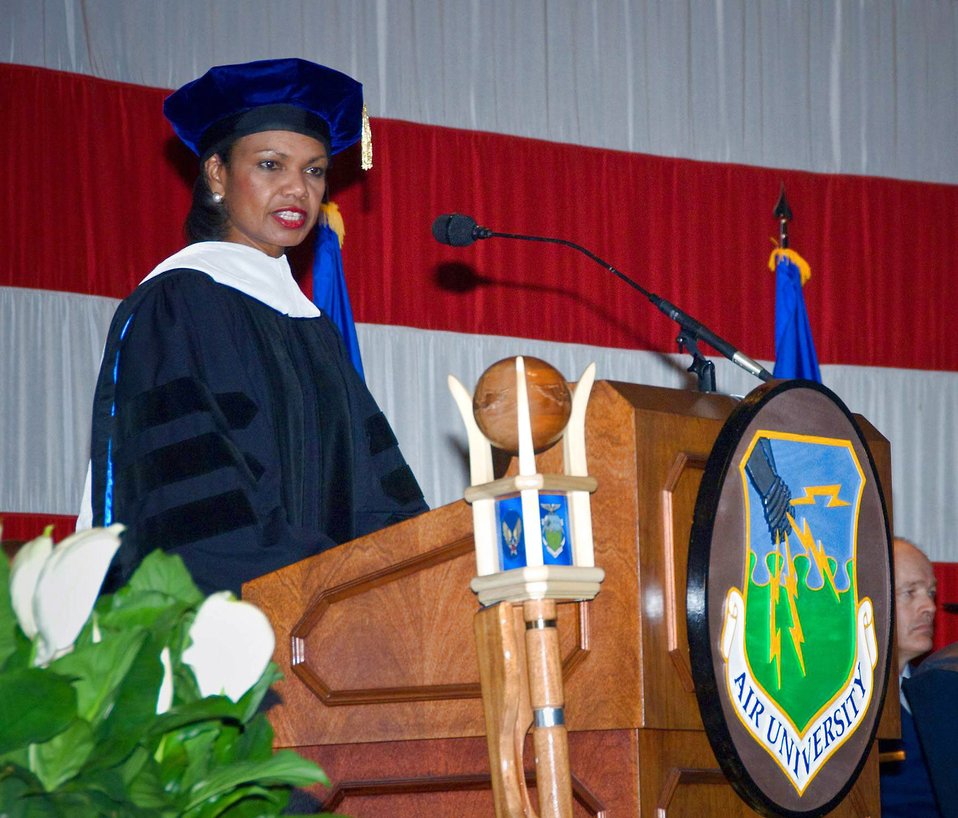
Secretary of state receives honorary Air University degree

Secretary of State Condoleezza Rice speaks to Air University's board of visitors, commanders, faculty and students after receiving an honorary Doctor of Letters degree from university officials April 14 at Maxwell Air Force Base, Ala. Air University bestowed the honor for her academic achievements and contributions to international relations and national security.